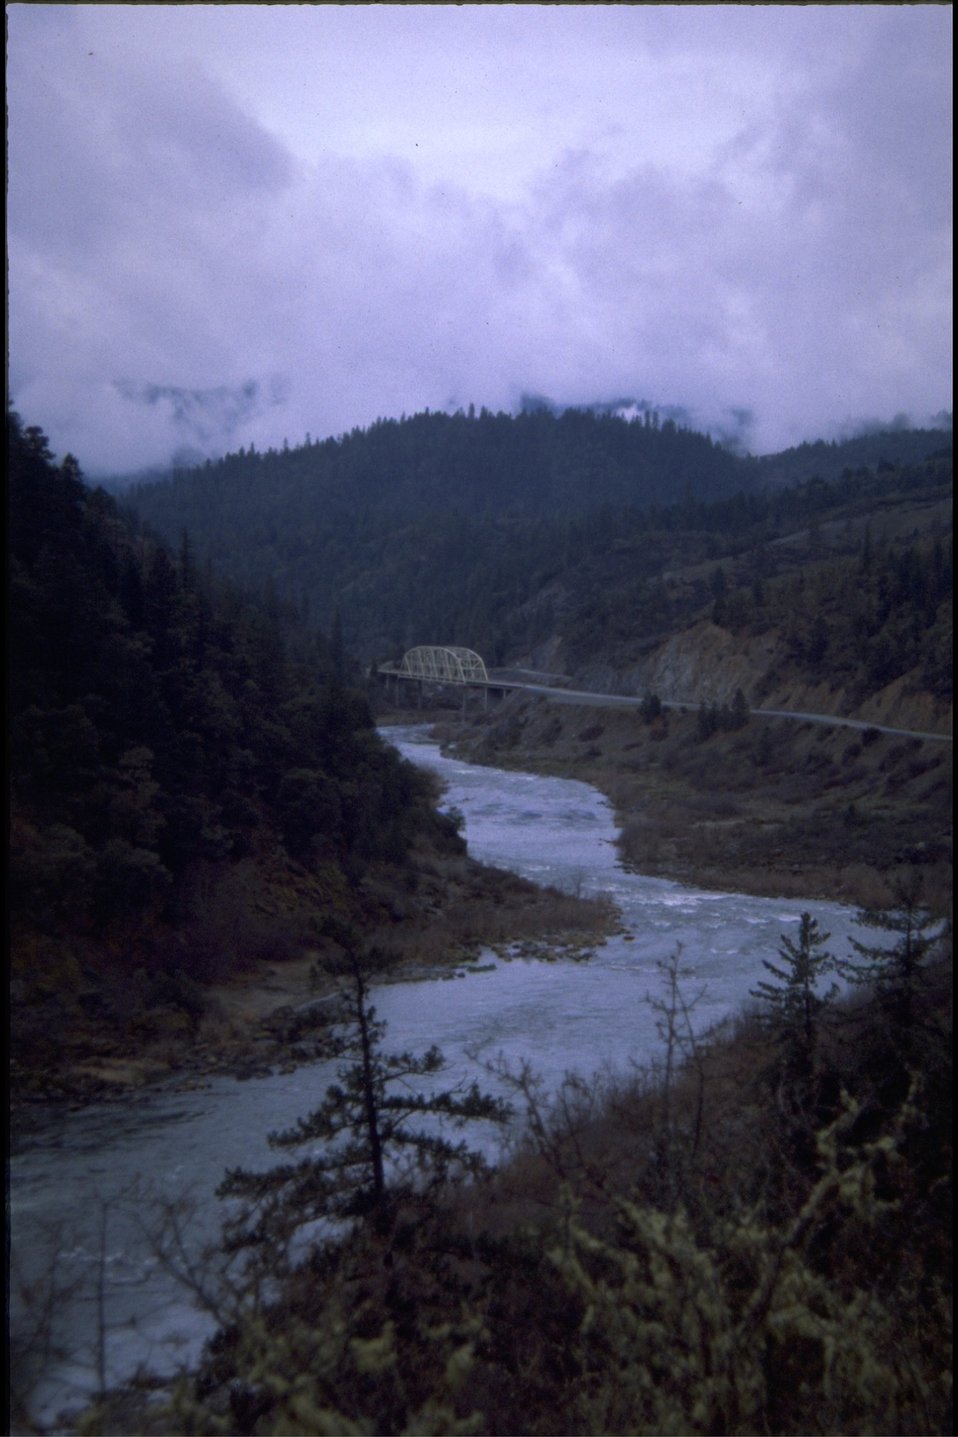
Rogue River - Hellgate Ridge. View from Hellgate View Point, Hellgate Recreation Area, Galice-Hellgate Byway.